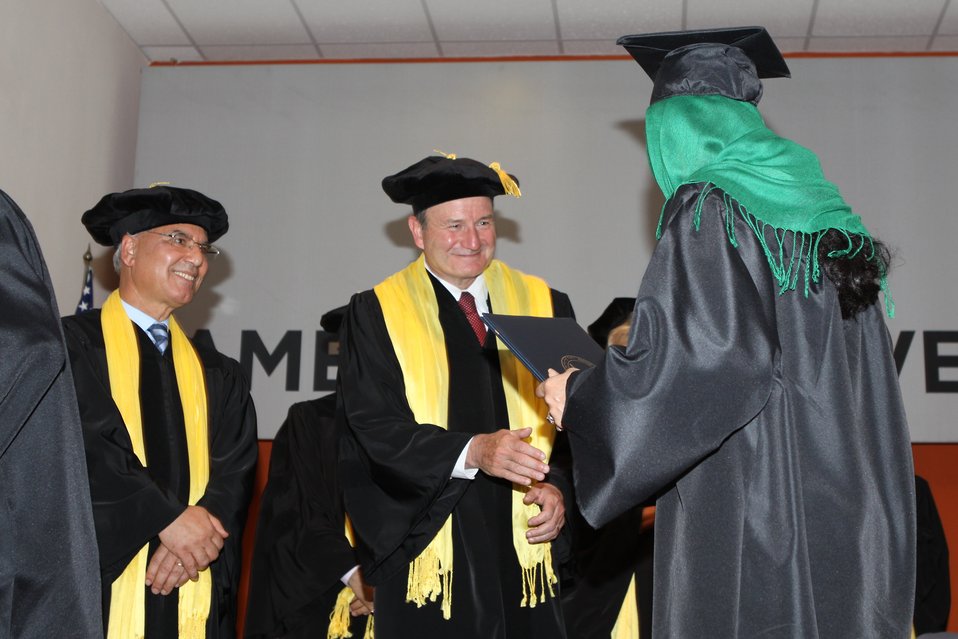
100526 AUAF Graduation 276